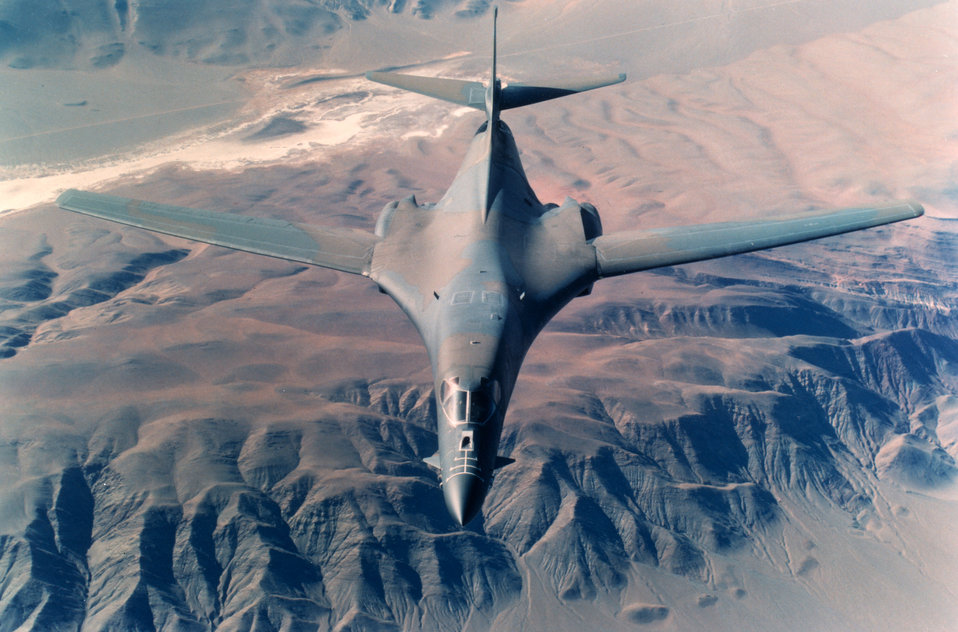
B-1